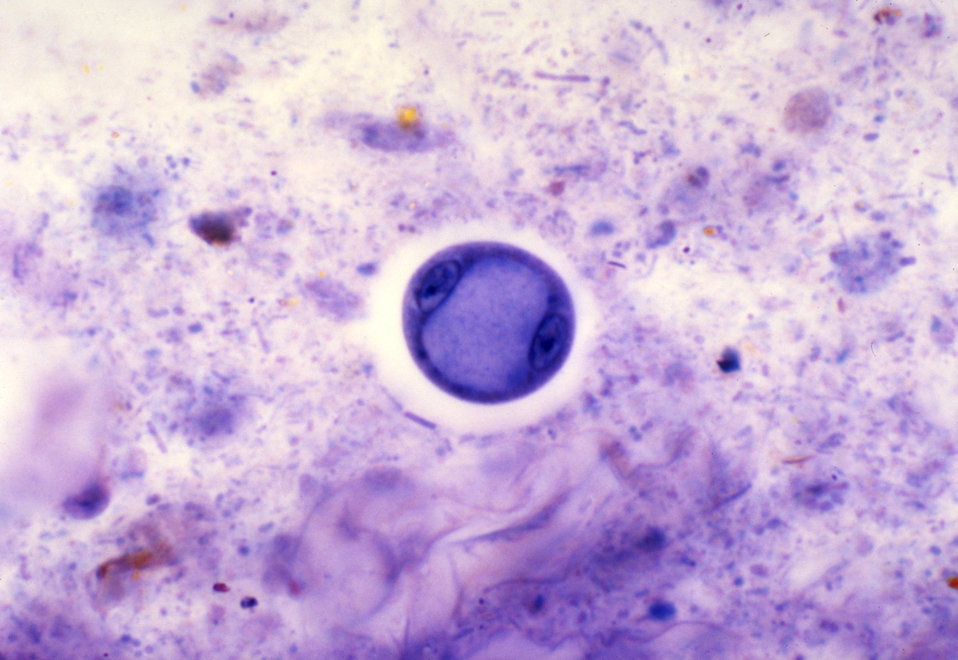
This photomicrograph depicts a binucleated cyst of an Entamoeba coli amoebic parasite.